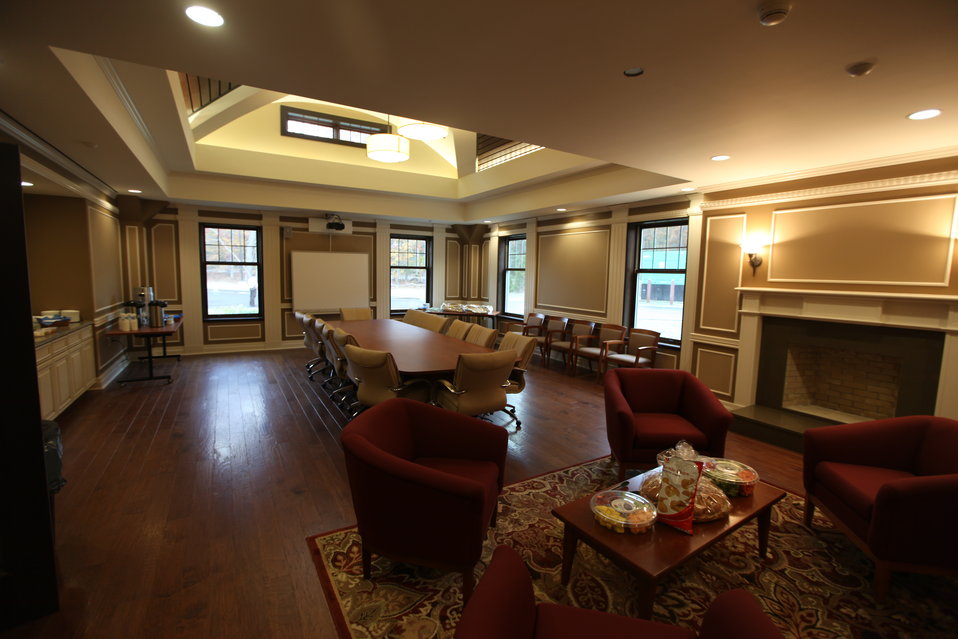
Conference Room

A beautifully designed function room at the Visitor Center